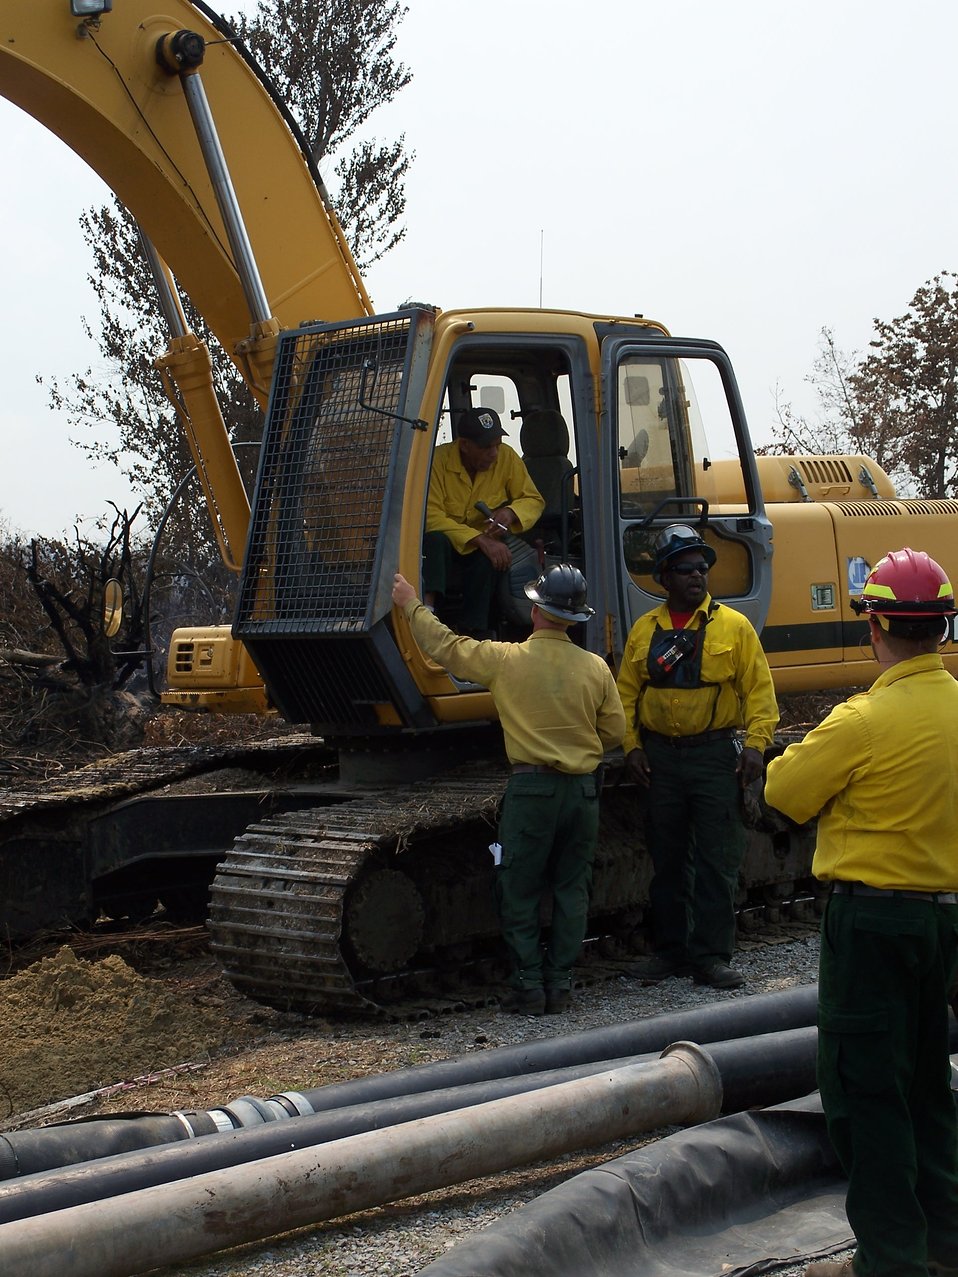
Heavy equipment at Lateral West

Suffolk, VA, August 2011: Heavy equipment is needed to clear ditches for flooding and installing high volume pumps at the Lateral West Fire on Great Dismal Swamp National Wildlife Refuge.